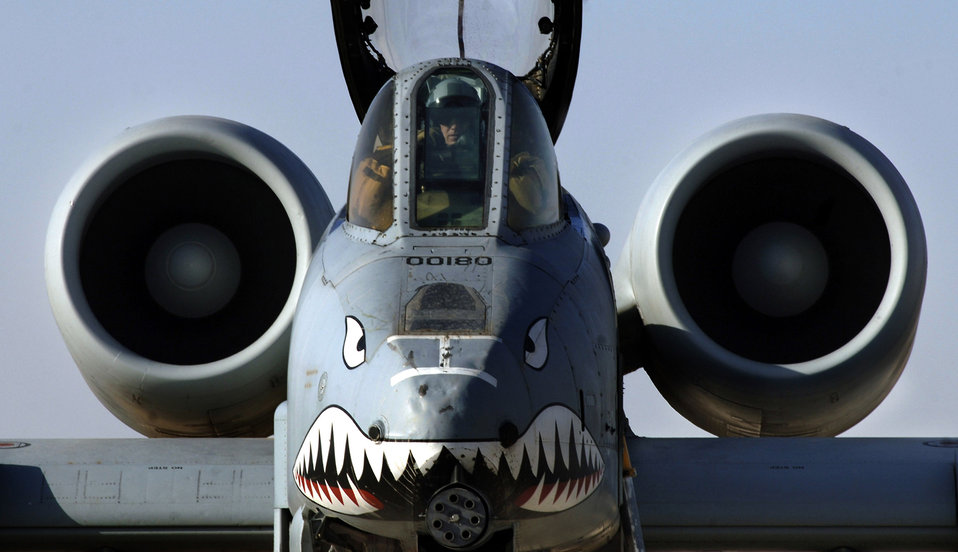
A-10 provides top cover for troops in Iraq

An A-10 Thunderbolt II takes off to provide close-air support to ground troops in Iraq April 25 from Al Asad Air Base, Iraq. The 438th Air Expeditionary Group A-10s perform 10 sorties daily, with 900 sorties in this last four months.